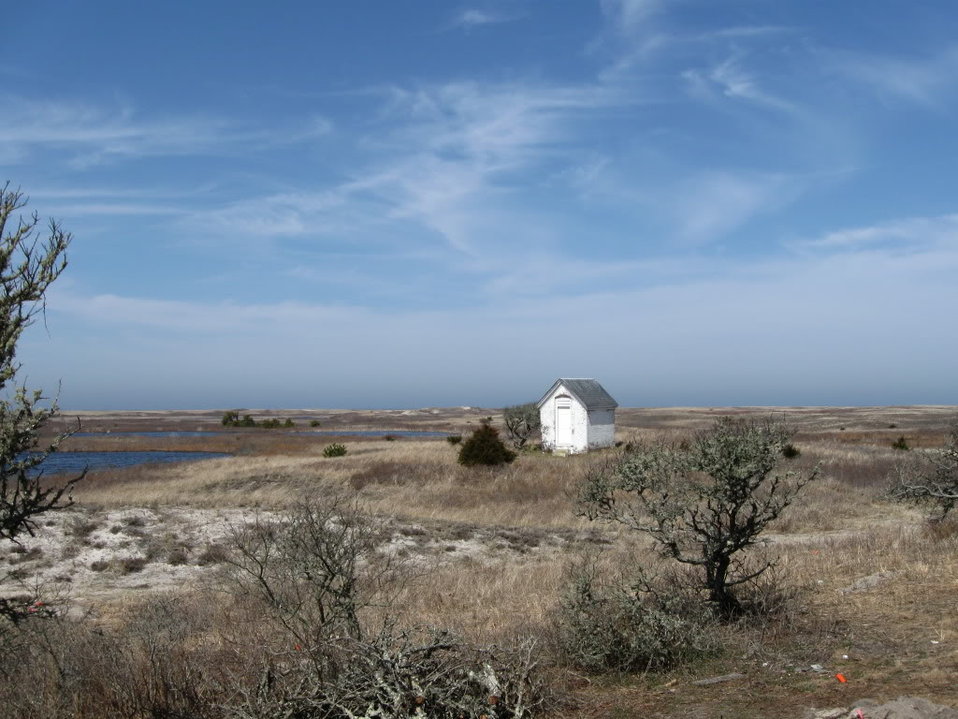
Photo of the Week - Monomoy National Wildlife Refuge (MA)

Photo of the Week - 4/20/2010

A view at Monomoy National Wildlife Refuge, located off the coast of Chatham, MA.